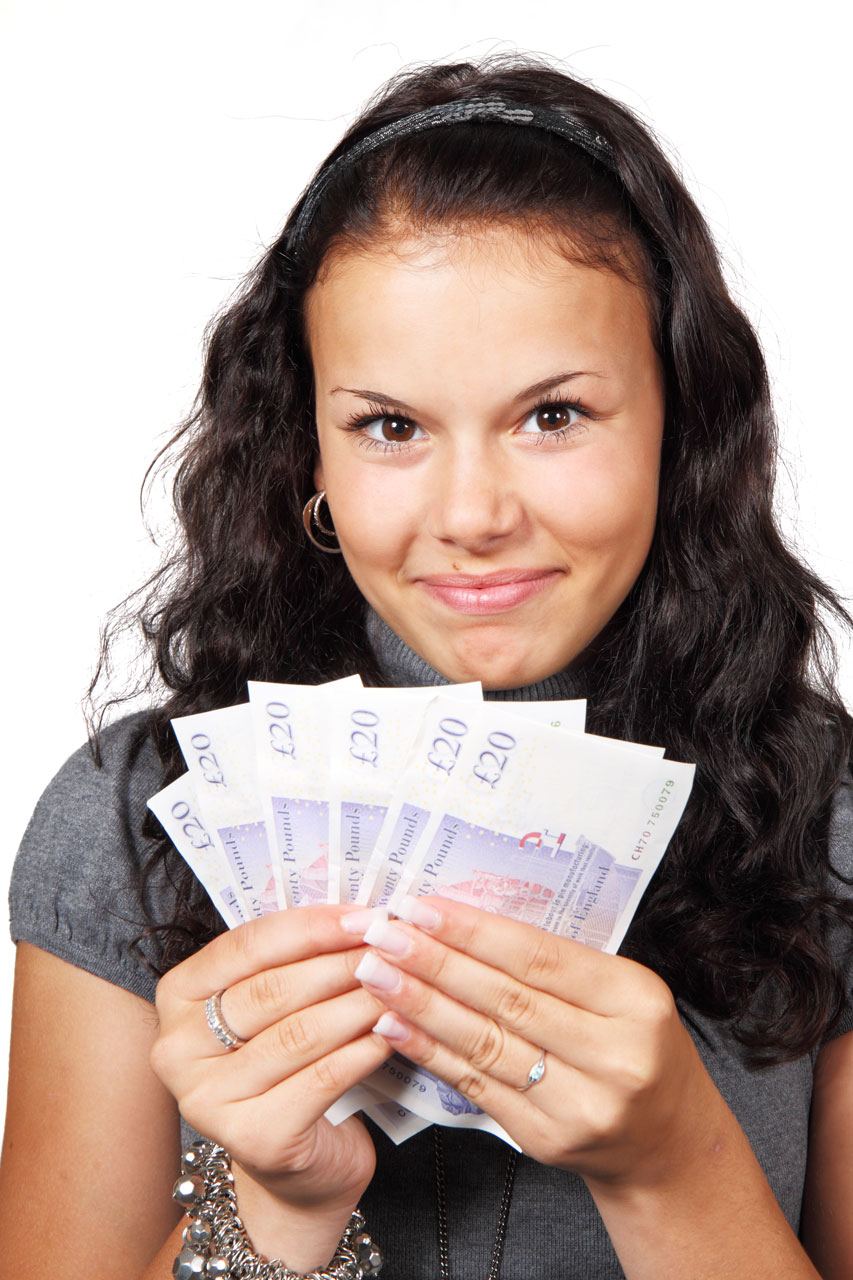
Woman and money fan

Young woman ready for shopping.